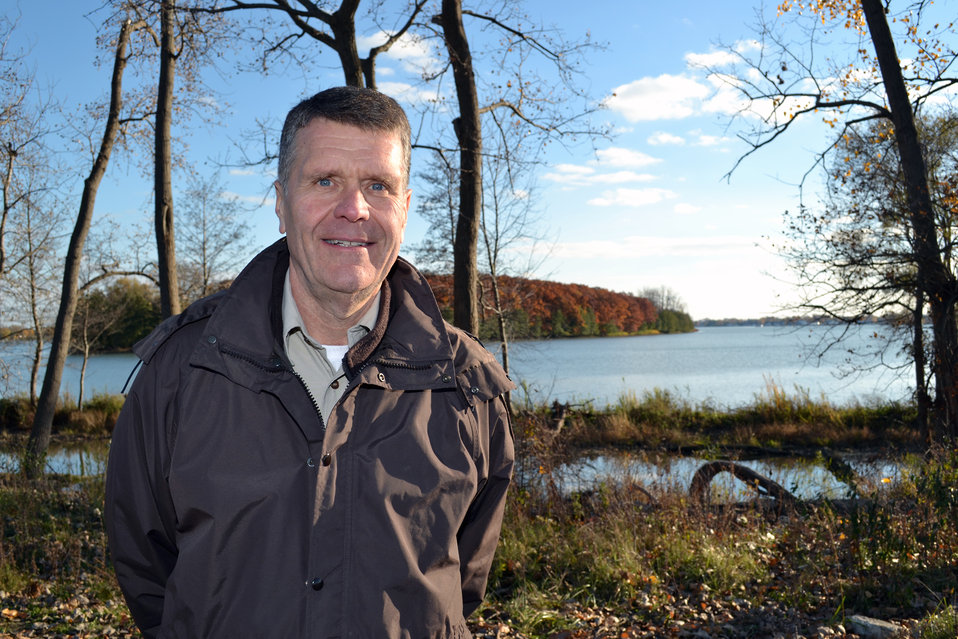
Refuge Manager Dr. John Hartig

With the Humbug Marsh in the background, Detroit River International Wildlife Refuge Manager Dr. John Hartig proudly welcomes the Gateway Visitor Center groundbreaking.